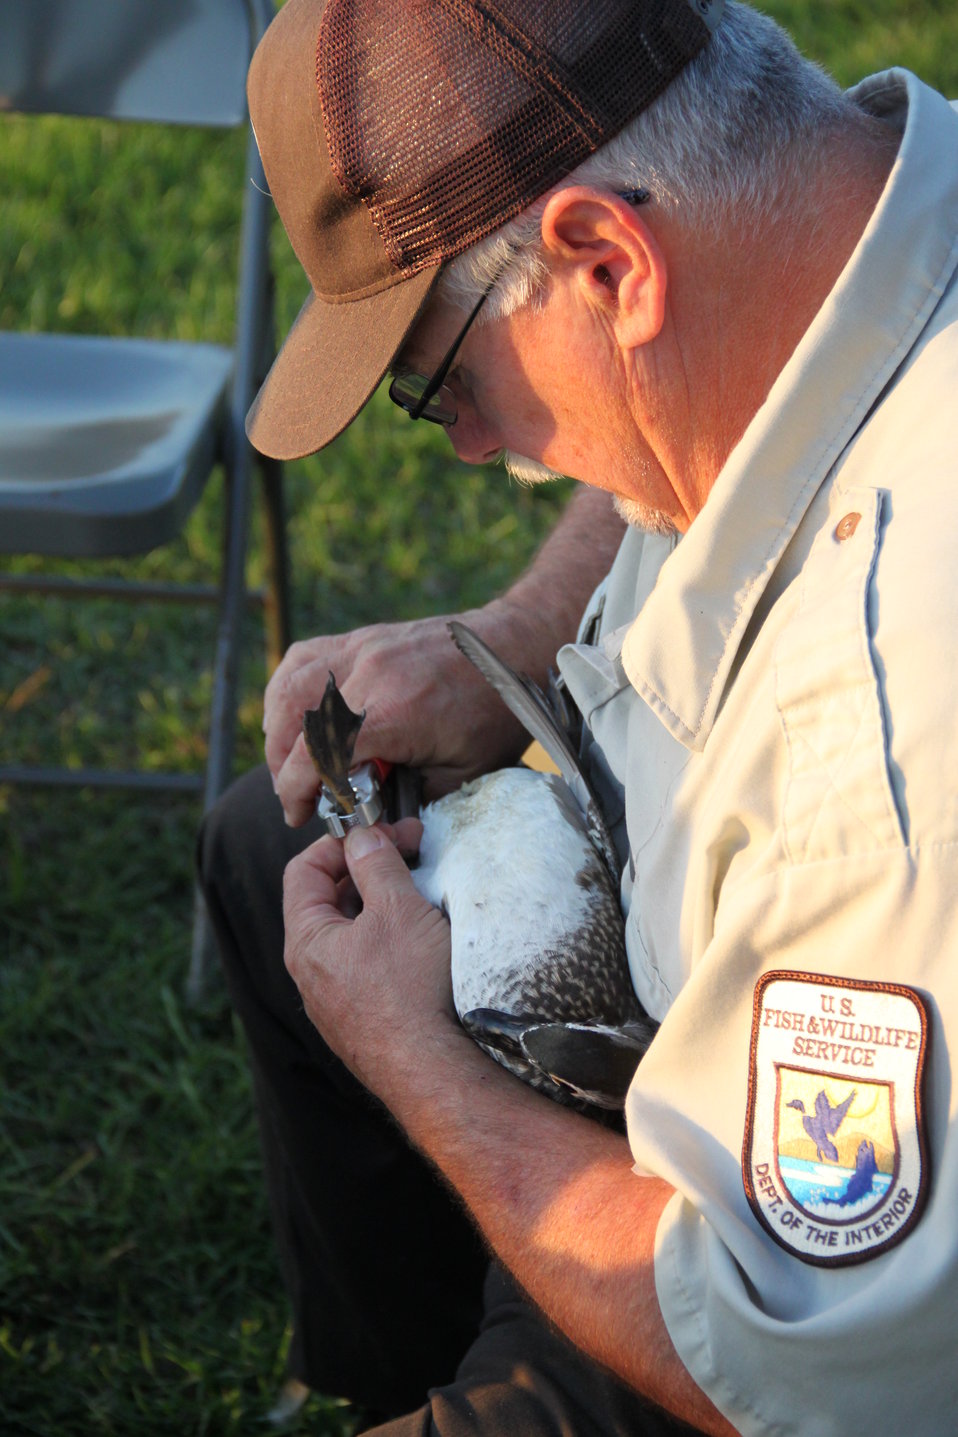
Waterfowl Banding September 2012

Dave Frisque of Missisquoi National Wildlife Refuge banding waterfowl.